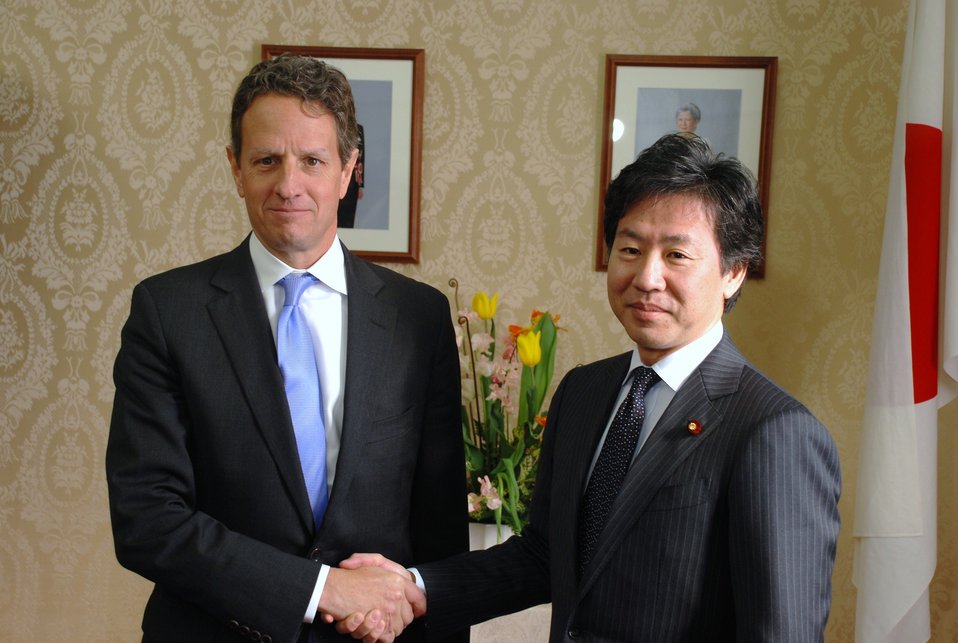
Secretary Geithner in Japan

On January 12, 2012, Treasury Secretary Tim Geithner met with Japanese Finance Minister Jun Azumi at the Ministry of Finance in Tokyo, Japan.